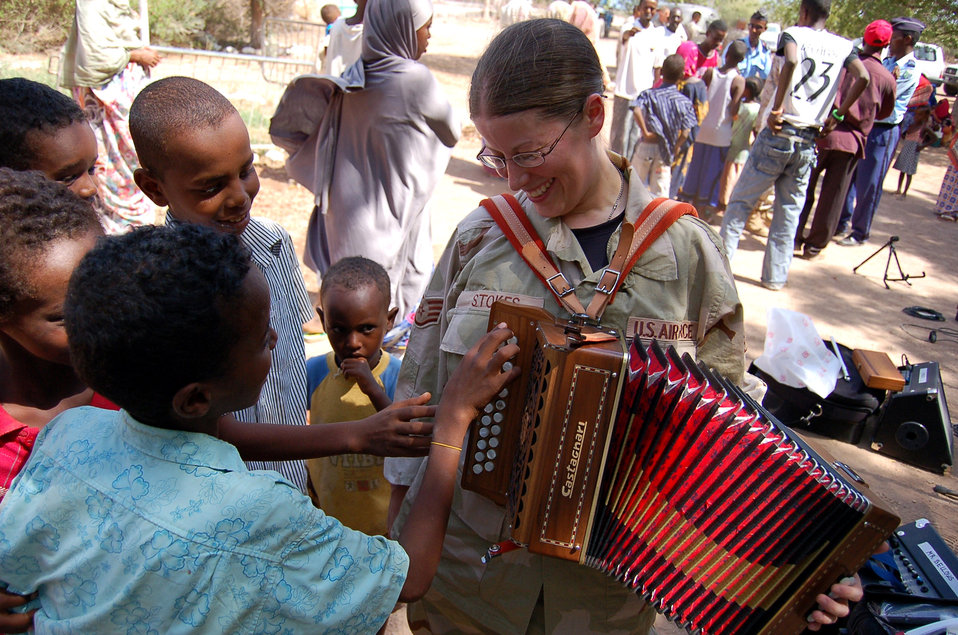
Celtic tunes in Djibouti

Staff Sgt. Lacey Stokes meets local children in Damerjog village, Djibouti, Oct. 9. Sergeant Stokes and other members of the U.S. Central Command Air Forces Celtic Band performed a 45-minute show and handed out gifts and toys as part of a community relations event. This is the fist time the CENTAF Celtic Band has deployed. Other members of the band are Tech. Sgts. Sherry Burt and Gail Adams, and Airmen 1st Class Brandon Richard and Amy McCann.